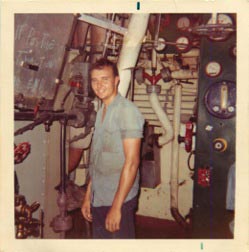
Richard Deshler served in the U.S. Navy from 1968 to 1972 as a boilerman on ammunition ships. He operated and maintained the main boilers and auxiliary equipment that provided the steam needed to run the rest of the ship. He calls himself “one of the silent majority of servicemen who work ensure that the sharp end of the sword is equipped to carry out their mission.” He retired after a career in environmental remediation but is an intermittent employee with the Fish and Wildlife Service, working on humpback chub monitoring in the Little Colorado River and Main Colorado River. He also recently assisted with the silvery minnow salvage work on the Rio Grande.